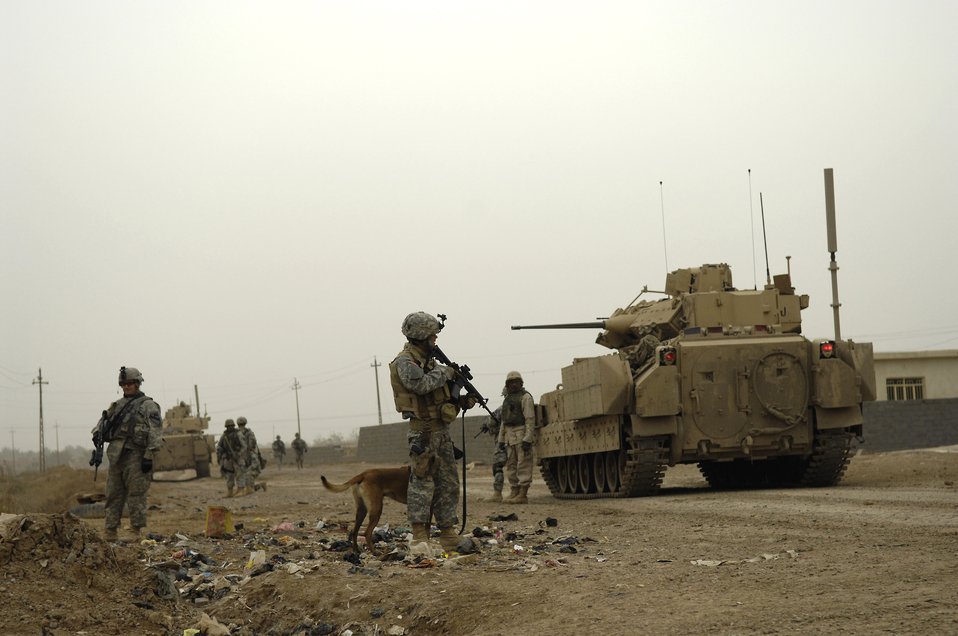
Airmen excel in nontraditional combat roles

Tech. Sgt. Harvey Holt and his military working dog accompany Soldiers from the 1st Cavalry Division Feb. 6 during a patrol in Kahn Bani Sahd, Iraq. Airmen continue to excel in nontraditional combat roles in support of combatant commanders' requirements where Airmen are deployed to assist Soldiers. Sergeant Holt is assigned to the 732nd Expeditionary Security Forces Squadron.